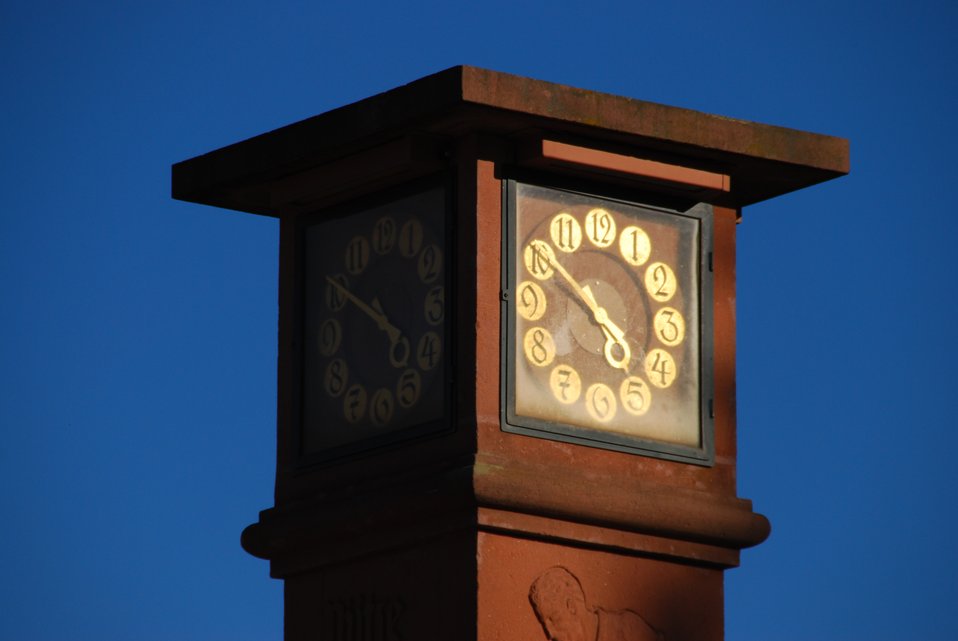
Deutsch: Uhren- oder Jahreszeitenbrunnen Frankfurt (Oder), Leipziger Platz, Detailansicht Clock and seasons fountain on square Leipziger Platz in Frankfurt (Oder), Brandenburg, Germany